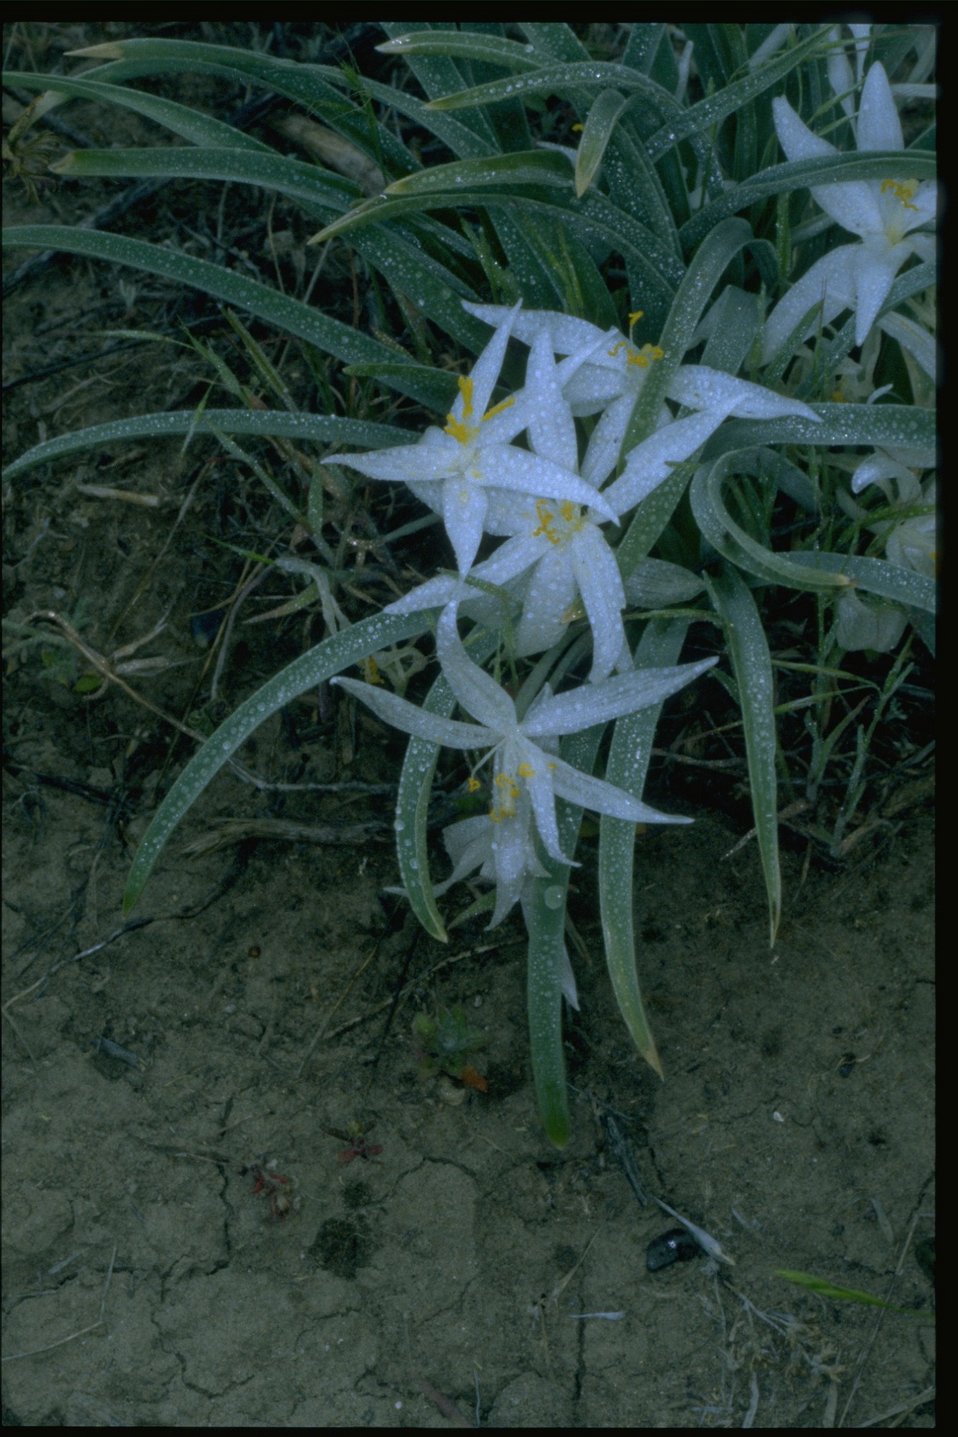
Medium shot of Star Lily; Sand Lily; Mountain Lily (Leucocrinum montanum).